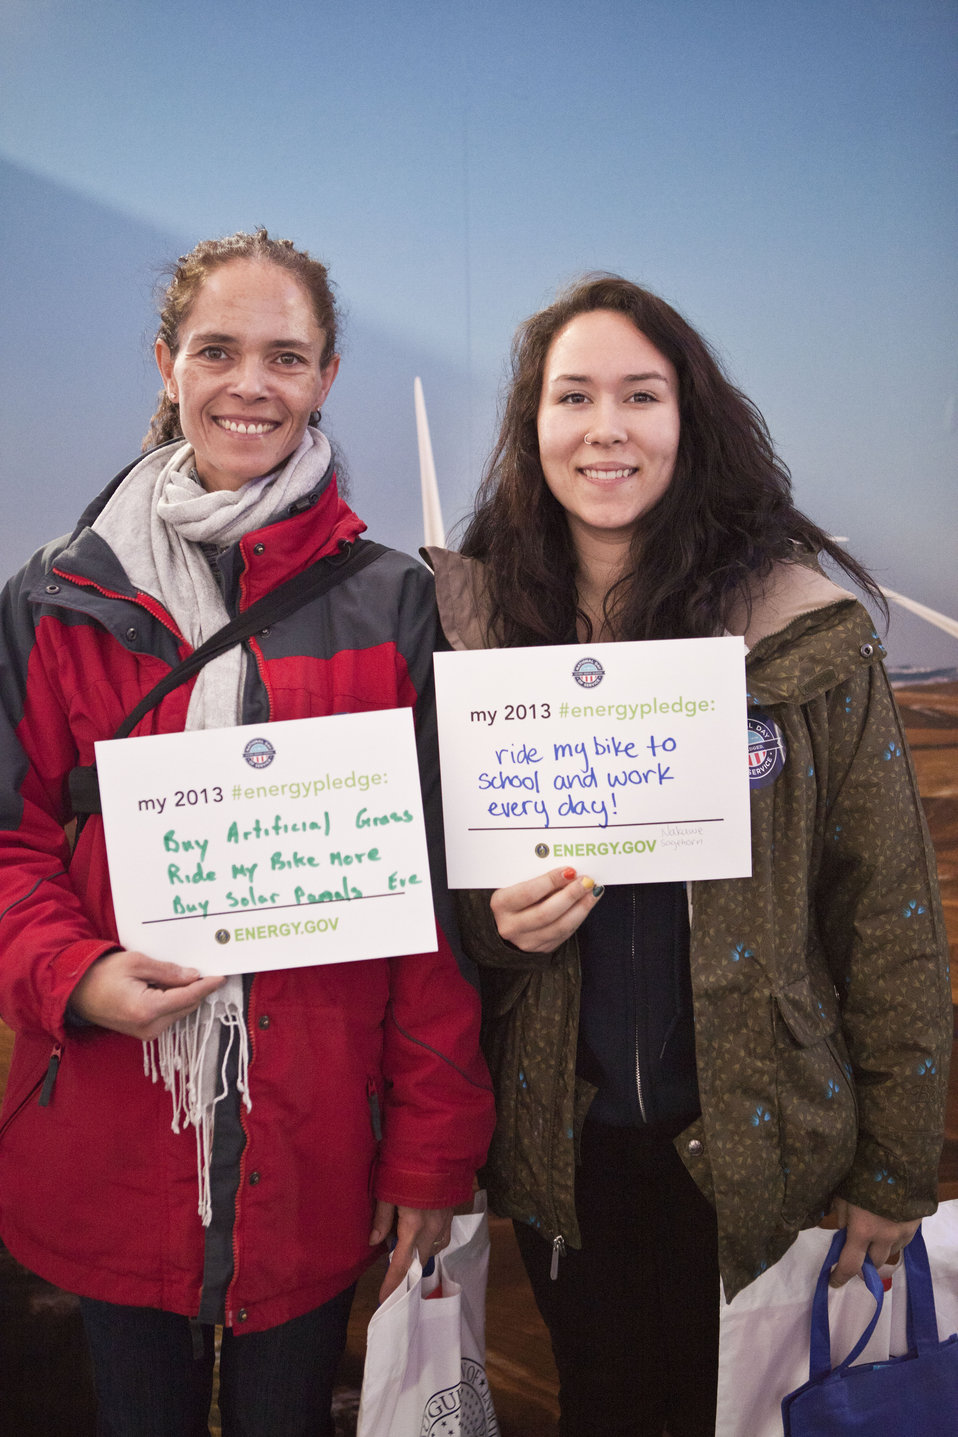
What's your #energypledge?